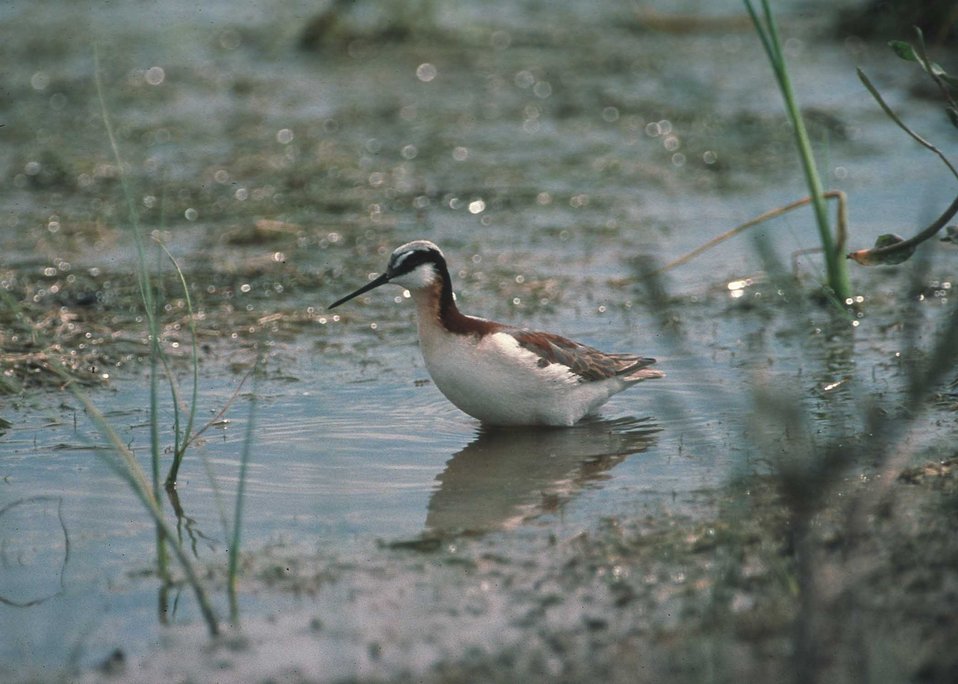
Wilson Phalathrope in the prairie pothole region of South Dakota.